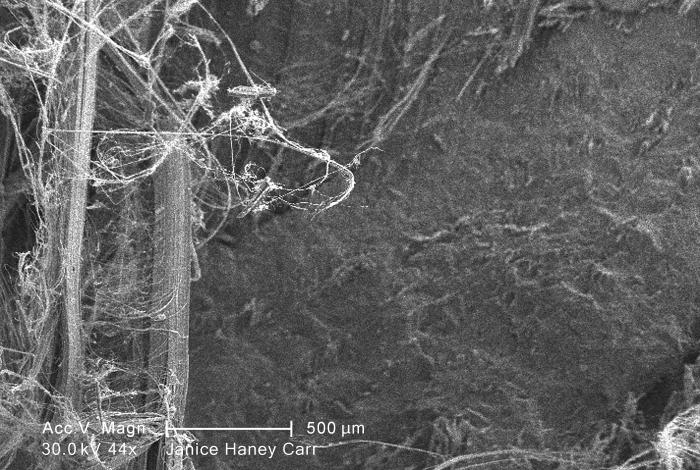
Under a low magnification of 44X, this scanning electron micrograph (SEM) revealed some of the microcrystalline ultrastructure exhibited by a piece of raw chrysotile, or white asbestos, which had been excavated from the Lowell Asbestos Mine on Belvidere Mountain, Vermont.